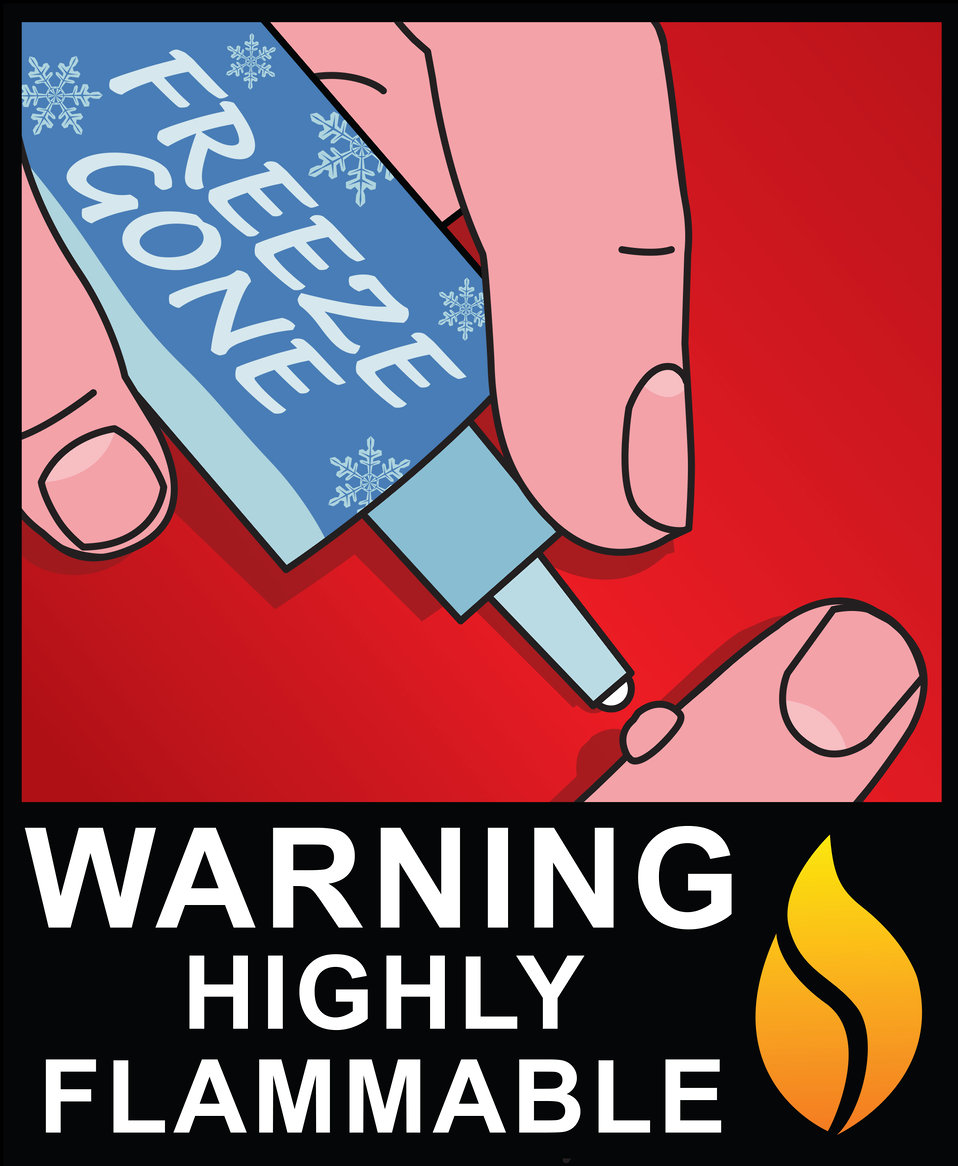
Some Wart Removers are Flammable

FDA has learned that some over-the-counter wart removal products have caught fire during use. Learn how to use cryogenic (removal by freezing) wart removal products safely and other options for removing warts. Read this Consumer Update to learn more.

• Some Wart Removers are Flammable

This graphic is free of all copyright restrictions and available for use and redistribution without permission. Credit to the U.S. Food and Drug Administration is appreciated but not required.